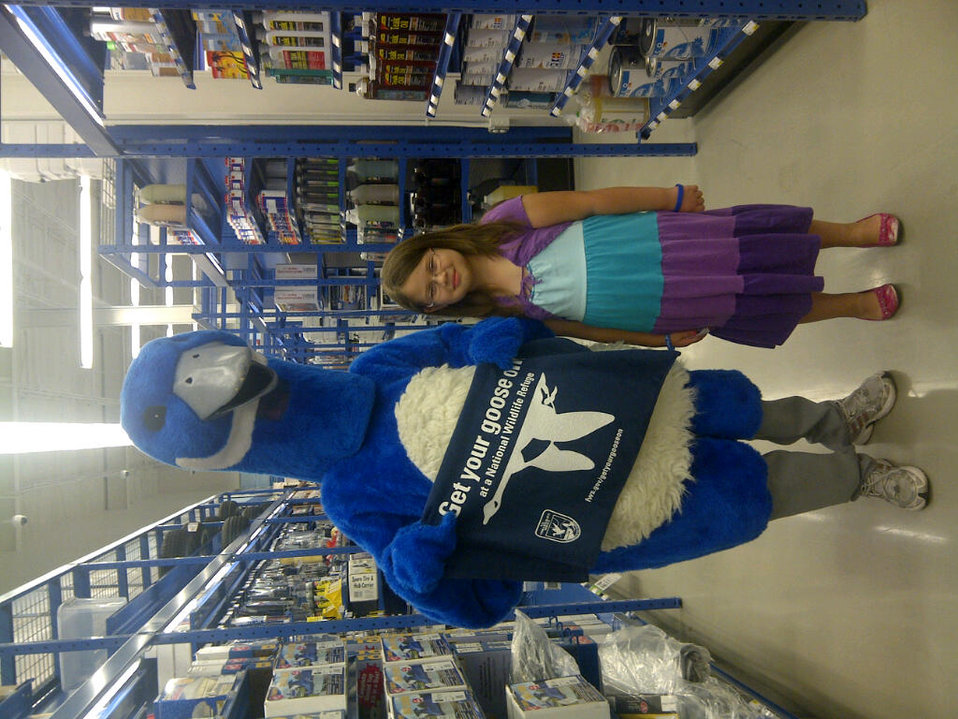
Get Your Goose On!